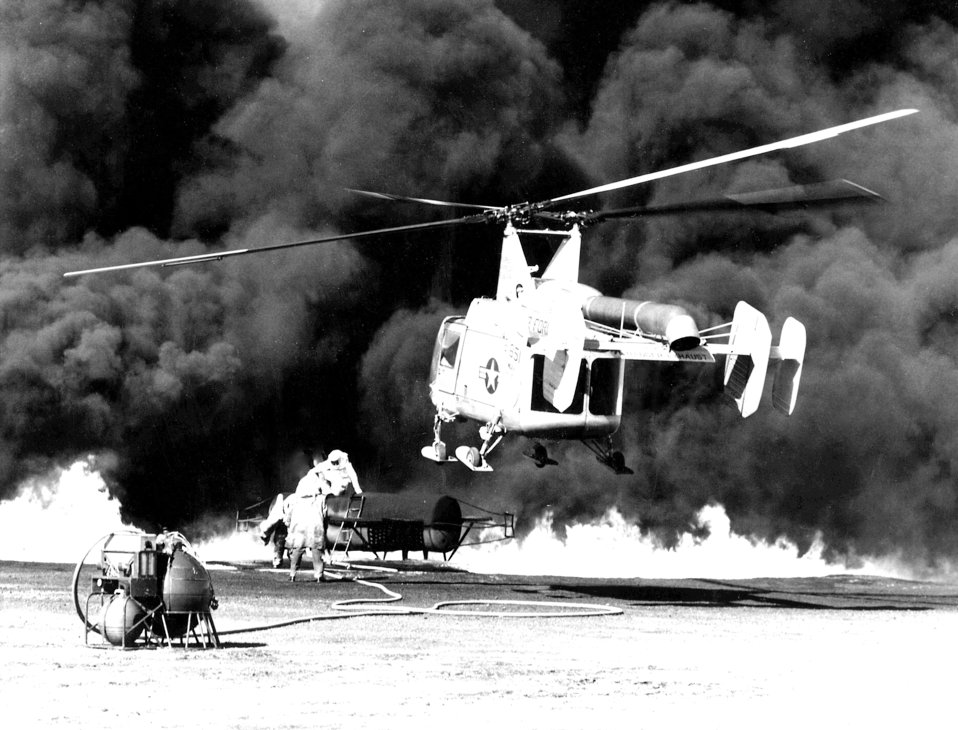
HH-43 Huskie

1960s -- As aerial commitment in South Vietnam grew, it quickly became clear that a specialized helicopter designed for search and rescue was needed. The Air Force used the HH-43 Huskie, the first such helicopter employed in Vietnam. The aircraft entered the Air Force inventory November 1958